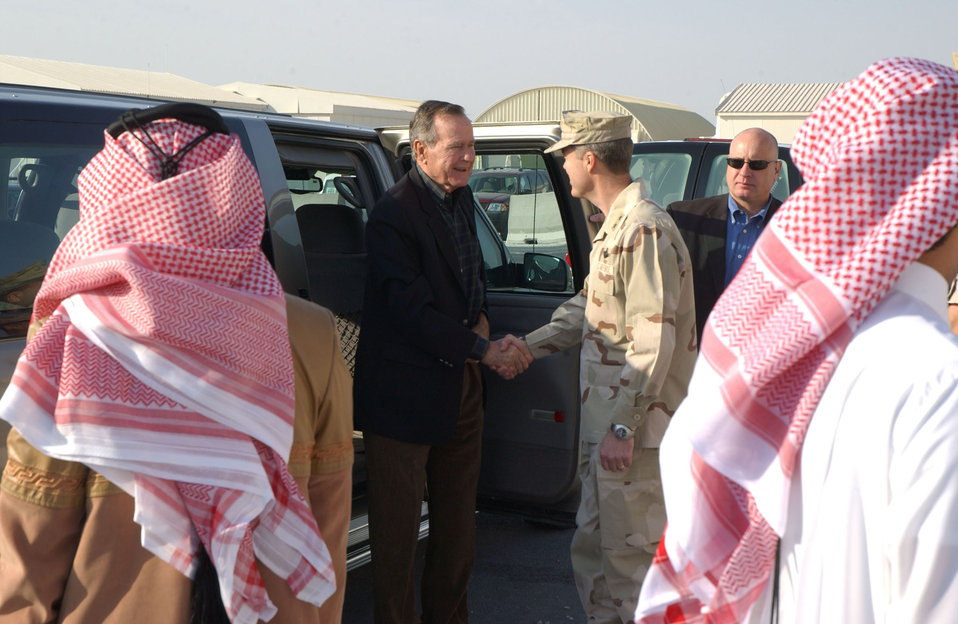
Former president visits deployed troops

SOUTHWEST ASIA (AFPN) -- Former President, George H. W. Bush, is greeted by Maj. Gen. Allen G. Peck during the former president's visit this week to Southwest Asia. General Peck is Deputy Combined Forces Air Component commander, U.S. Central Command.